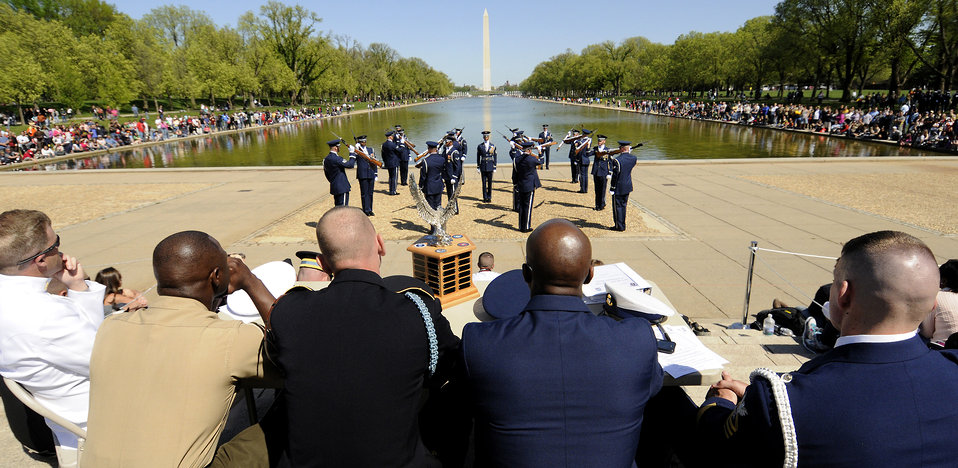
Joint service drill competition held at Lincoln Memorial

A panel of judges from the five U.S. military branches views a performance by the U.S. Air Force Honor Guard Drill Team during the 3rd Annual Joint Service Drill Team Exhibition April 10, 2010, at the Lincoln Memorial in Washington, D.C. The event featured drill team performances from all five military branches.